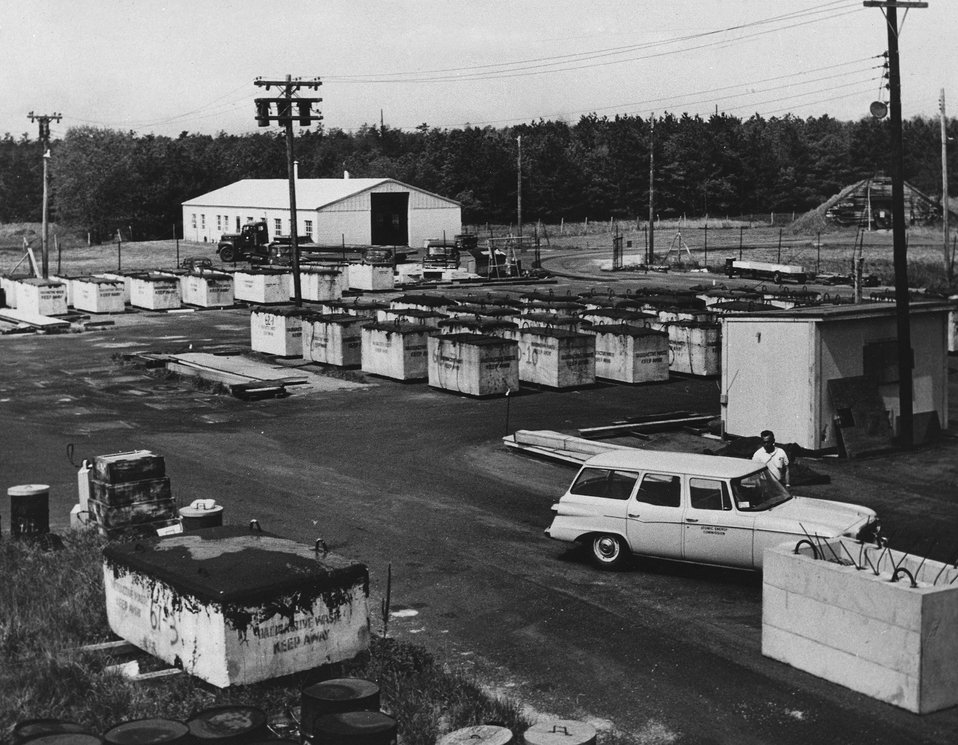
Part of the radioactive wastes storage area at Brookhaven National Laboratory, showing some of the steel-reinforced concrete vaults ready for shipment. c. 1963